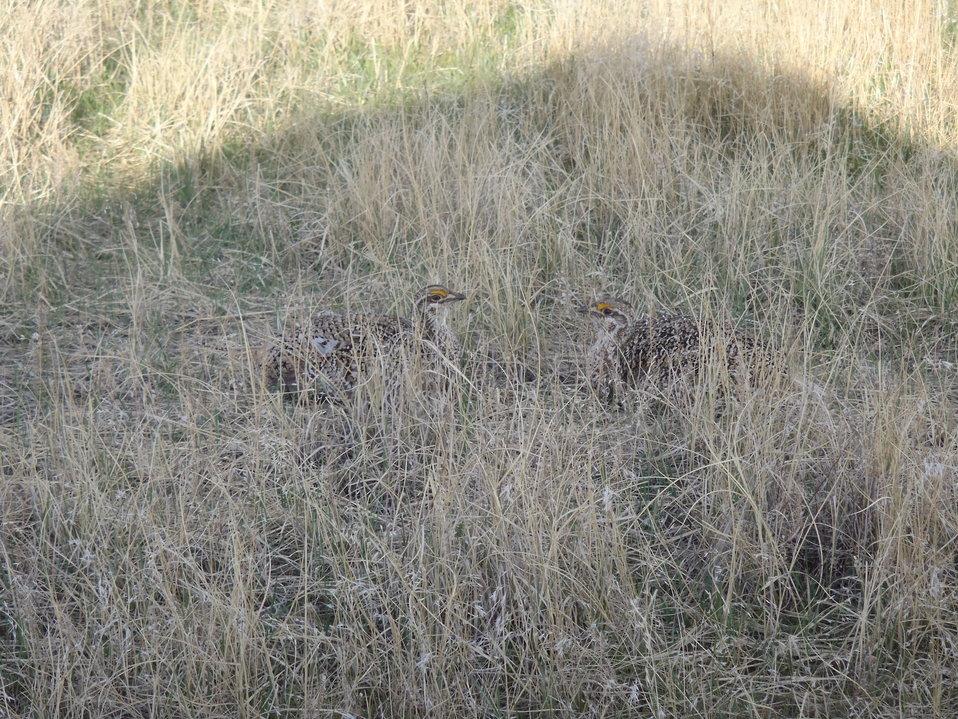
Sharp-tailed Grouse

The mating routine of sharp-tailed grouse involves males displaying communally at a traditional site (one used year after year). This site is known as a “lek.” Males compete for mates by performing a ritualized dance in conjunction with calling (often a booming sound) and inflating purplish air sacs along their necks. Females approach the edge of the lek, observe and eventually select a dance participant to mate with.